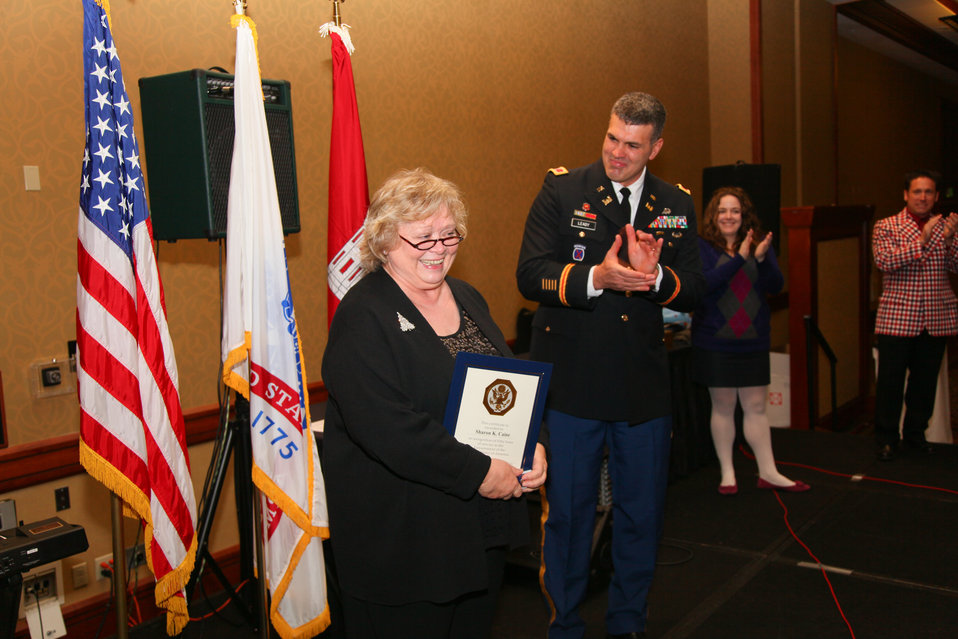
Fifty Years of Service

SACRAMENTO, Calif. (Dec. 20, 2010) – U.S. Army Corps of Engineers Sacramento District Commander Col. Bill Leady (second from left) applauds Sharon Caine, chief of the real estate division, after presenting her a certificate in recognition of fifty years of federal service here Dec. 17. Caine was recognized during the Sacramento District’s annual holiday party.